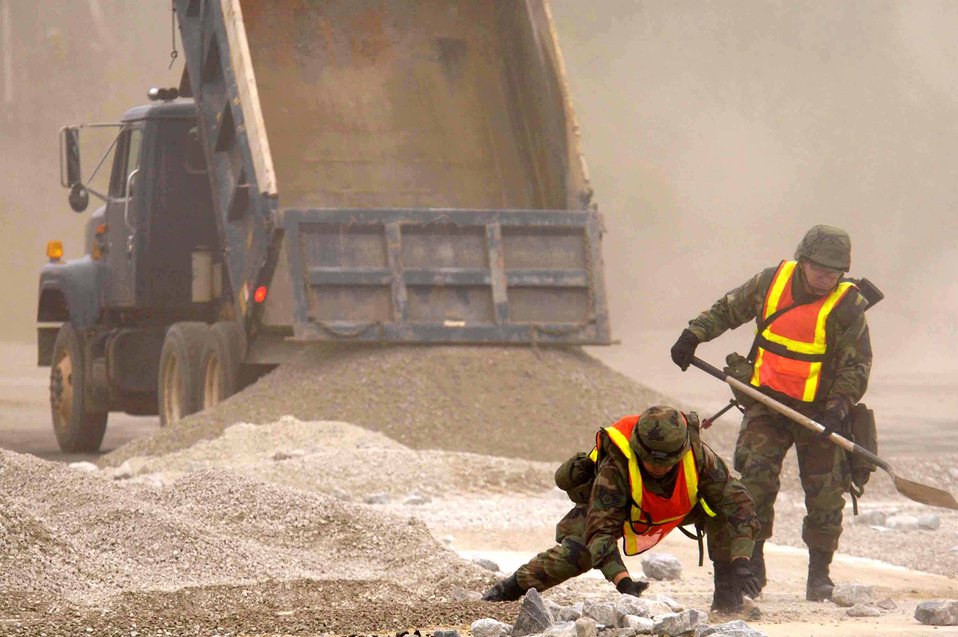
Airmen ready to rapidly repair runways

EGLIN AIR FORCE BASE, Fla. -- Staff Sgt. Charles Cahoon (left) and Master Sgt. Kevin Donovan remove debris from a damaged runway before making repairs. The rapid runway repair team practiced fixing a runway damaged by